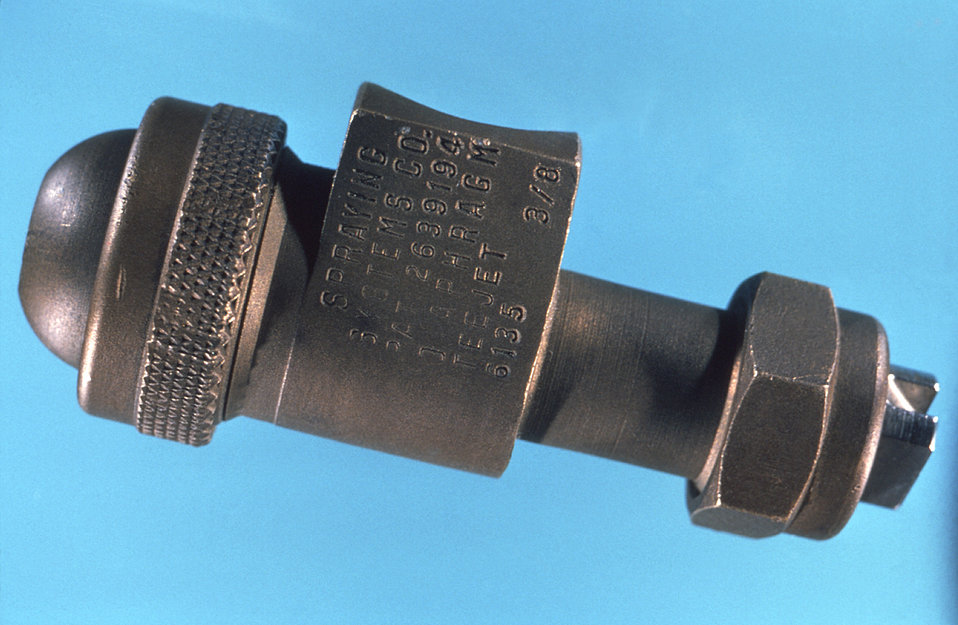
This photograph depicts a spray nozzle through which a ultra-low volume (ULV) insecticidal fog is dispersed.